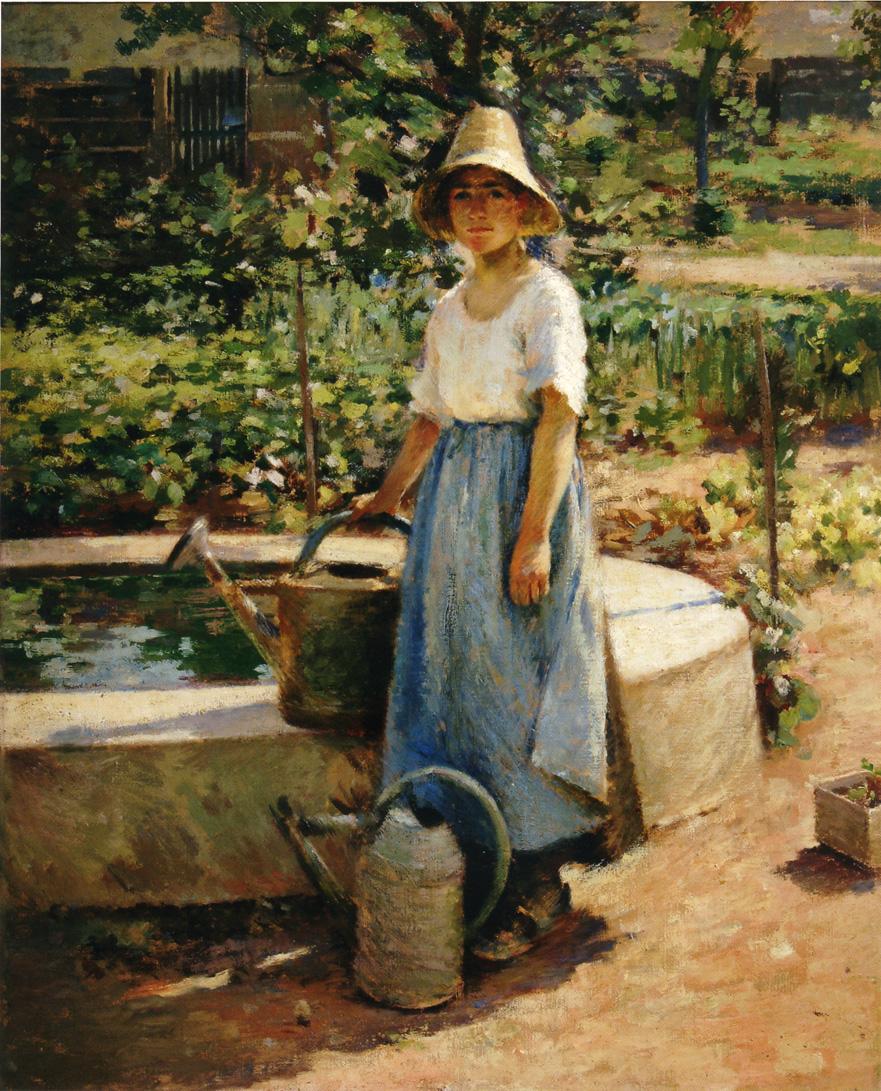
Robinson At the Fountain